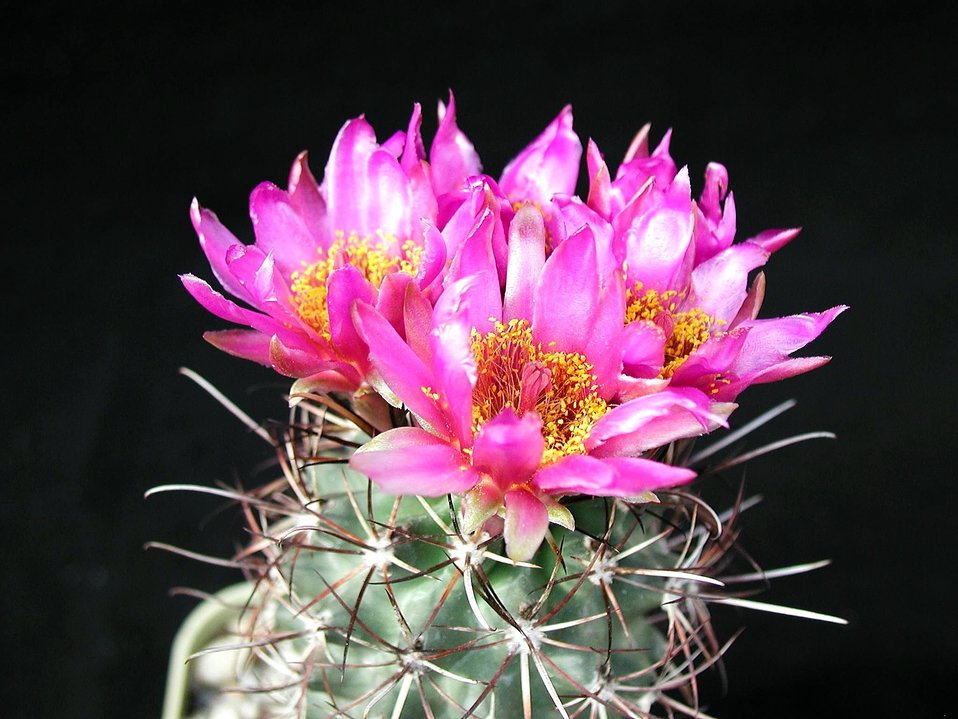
English:
Image title: Beautiful cactus flowers Image from Public domain images website, http://www.public-domain-image.com/full-image/flora-plants-public-domain-images-pictures/flowers-public-domain-images-pictures/cactus-pictures/beautiful-cactus-flowers.jpg.html